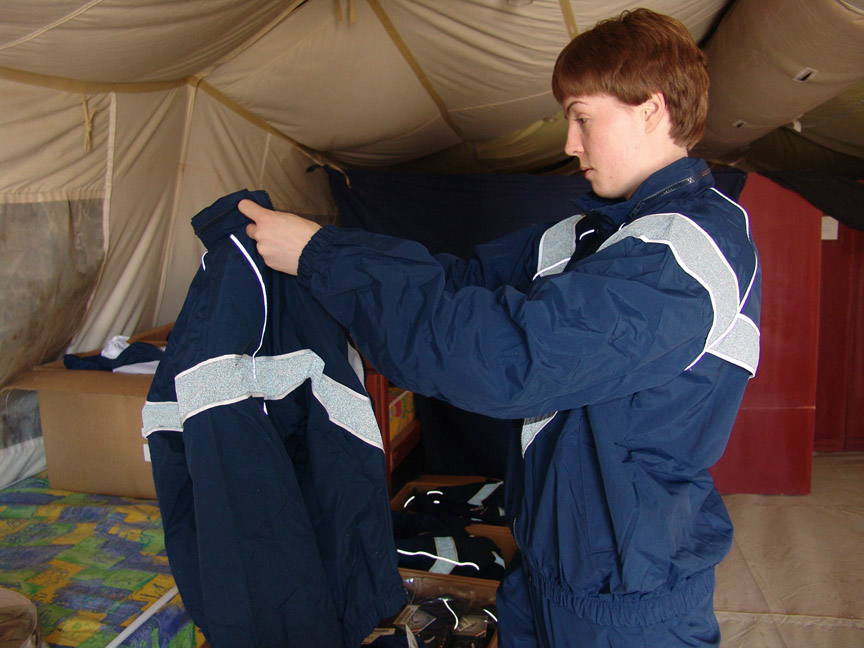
PT-ready!

SOUTHWEST ASIA -- First Lt. Danielle Boz inspects a new Air Force physical training uniform jacket at a forward-deployed location. The jacket and matching warm-up pants combine with new Air Force PT shorts and shirts to give Airmen a uniform they can wear both off-duty and while exercising. Lieutenant Boz is an intelligence officer assigned to the 386th Air Expeditionary Wing.